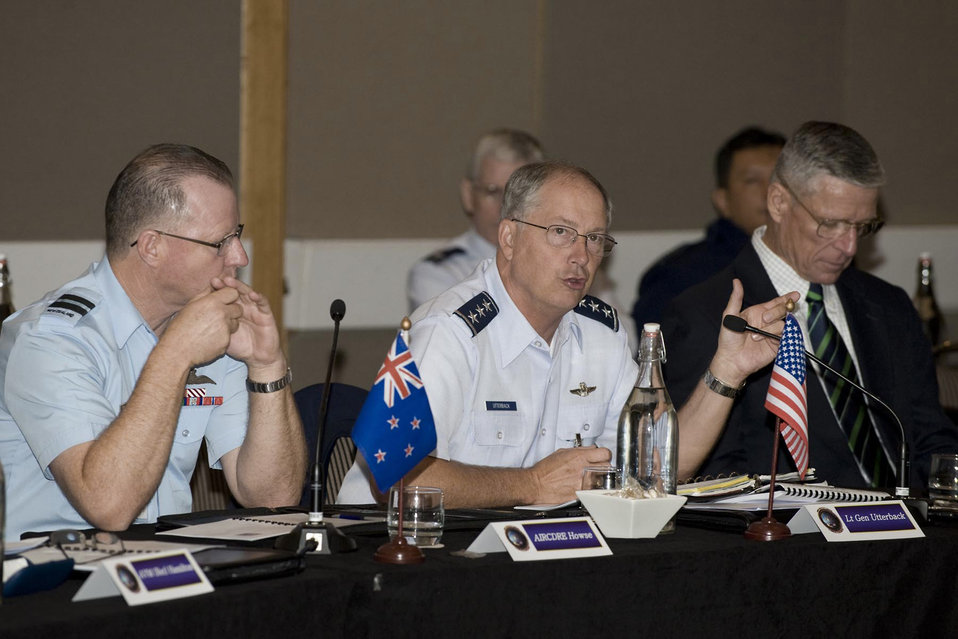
Asia-Pacific nations meet to discuss relief operations

New Zealand Air Commodore Gavin House (left to right), Lt. Gen. Chip Utterback and retired Marine Lt. Gen. John Goodman discuss humanitarian assistance with senior officers from 17 other Asia-Pacific nations during the Pacific Rim Airpower Symposium June 24 in Wellington, New Zealand. Air Commodore House is the Joint Forces New Zealand air component commander. General Utterback is the 13th Air Force commander at Hickam Air Force Base, Hawaii. General Goodman is the director of the Center for Excellence in Disaster Management and Humanitarian Assistance at the Tripler Army Medical Center, Hawaii.